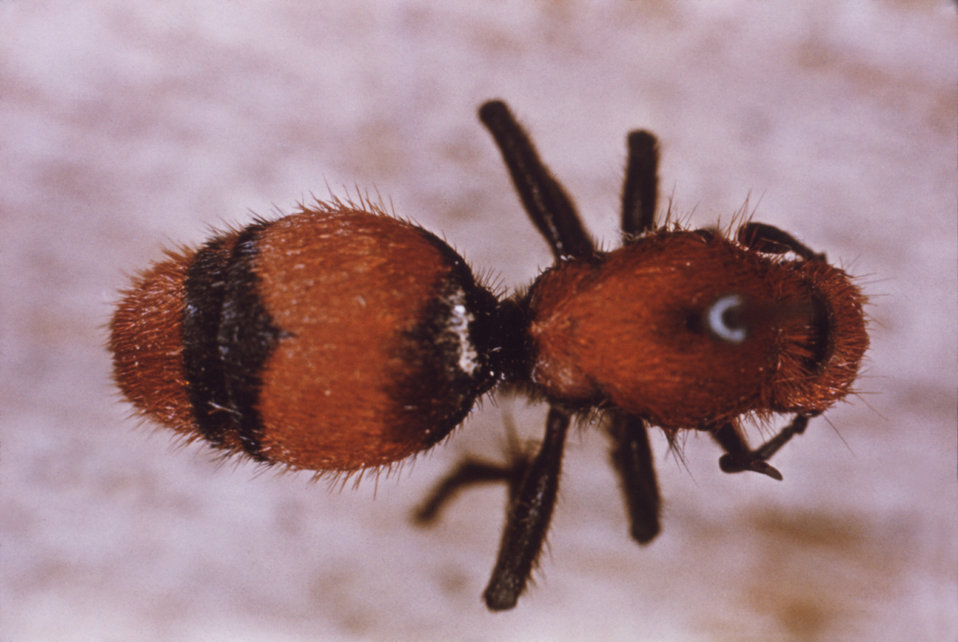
This image depicts the dorsal view of a velvet ant, Dasymutilla occidentalis.